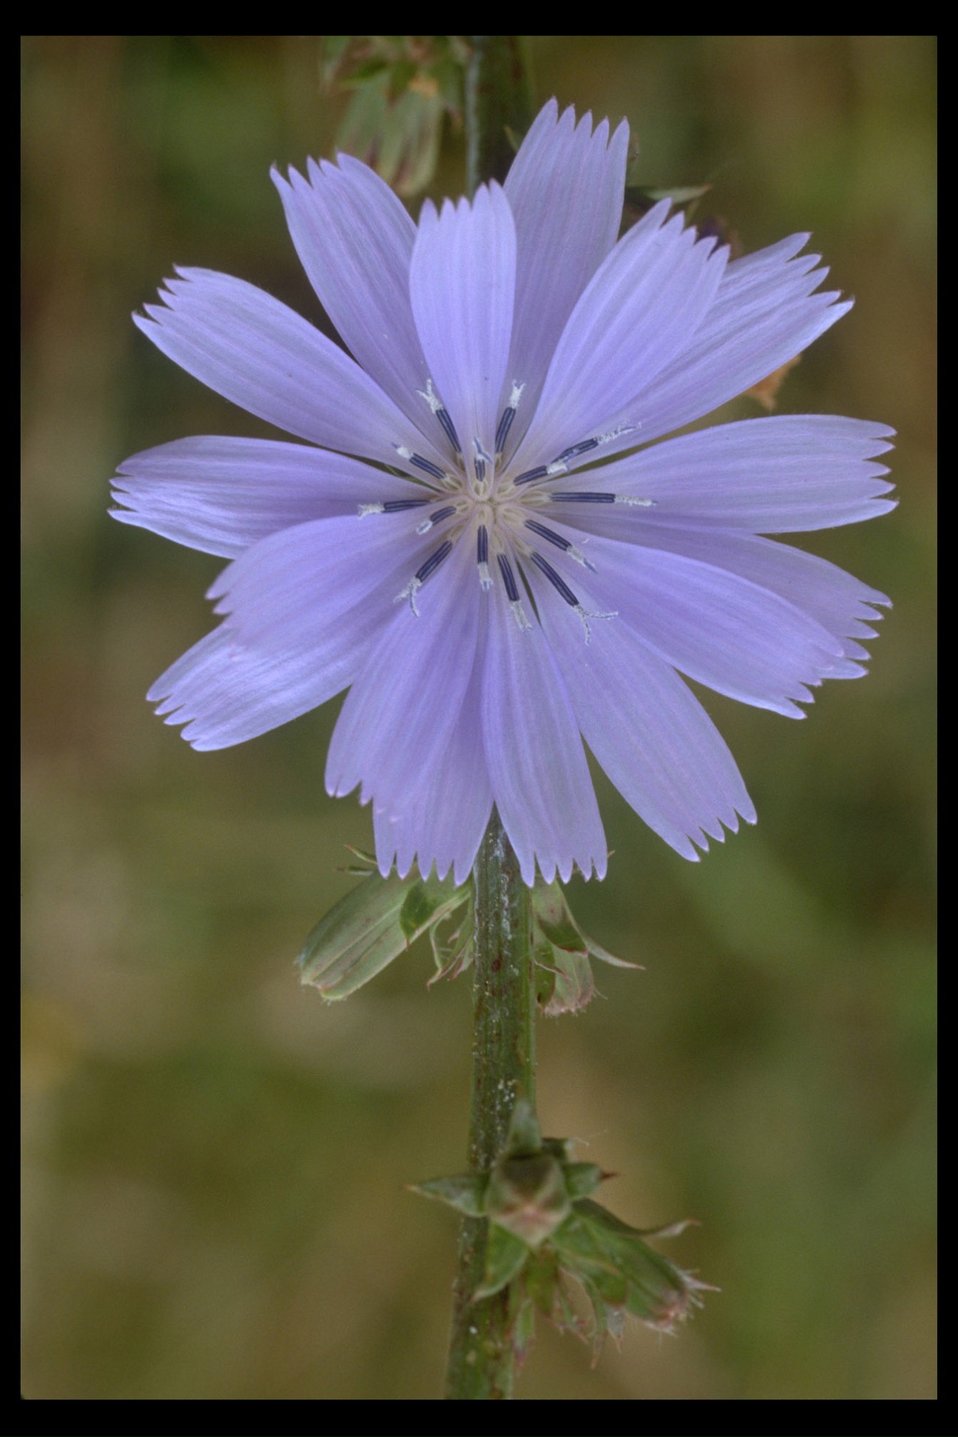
Bachelor's Button (Centaurea cyanus) found on a vacant lot along Spring Street in Medford, OR.